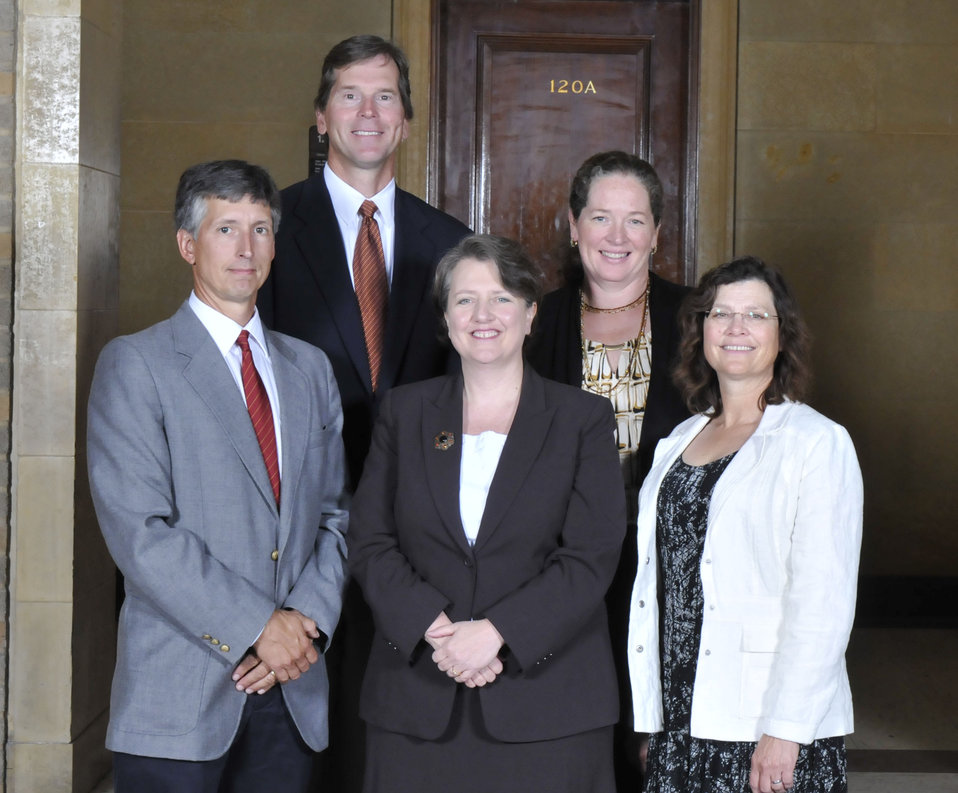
Barley, Wheat, Potato, and Tomato Coordinated Agricultural Projects Team
National Institute of Food and Agriculture, Davis CA
Jorge Dubcovsky, Group Leader
In recognition to the barley, wheat, potato, and tomato Coordinated Agricultural Projects for their scientific c discoveries and
their translation into beneficial agricultural products.
On September 14, 2011 in the patio of the Whitten Building Patio of the US Department of Agriculture in Washington, DC.